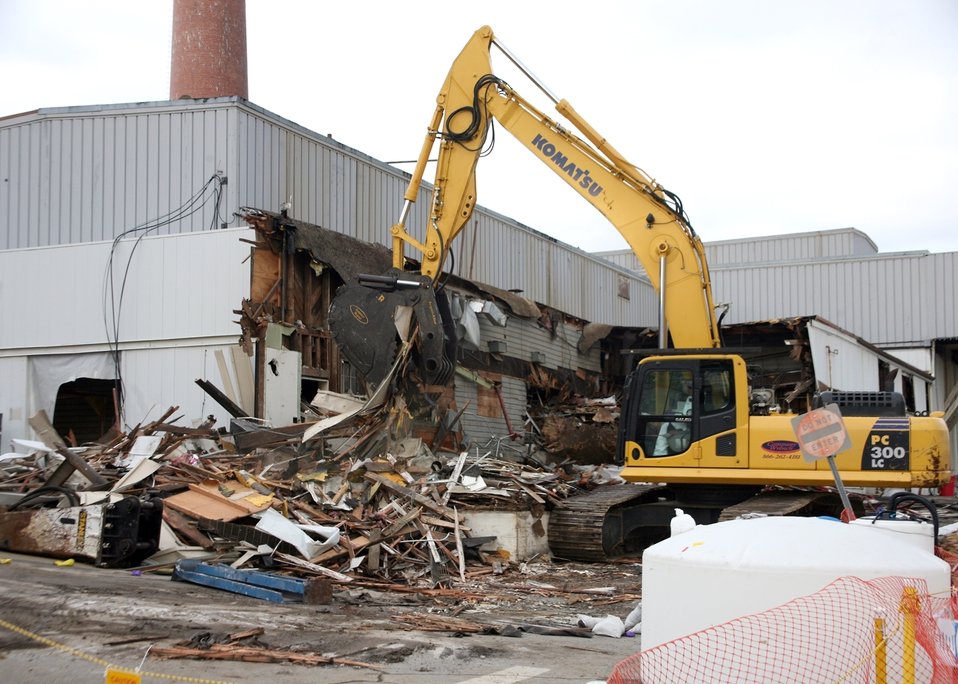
Building 3026 Demolition

At ORNL, demolition work is changing the landscape of the site and clearing the way for future development.